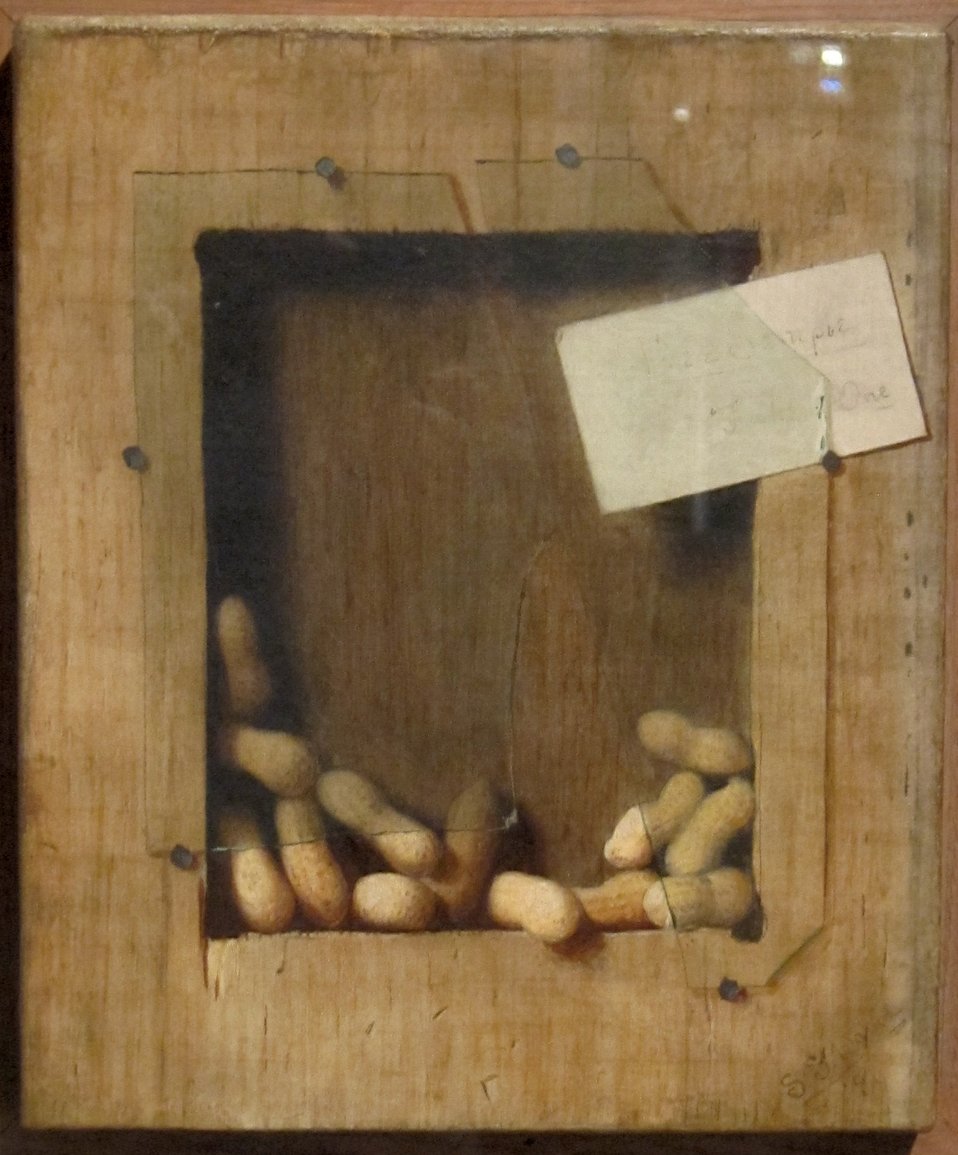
Free Sample, Take One, oil on canvas painting by De Scott Evans, 1891, Dayton Art Institute